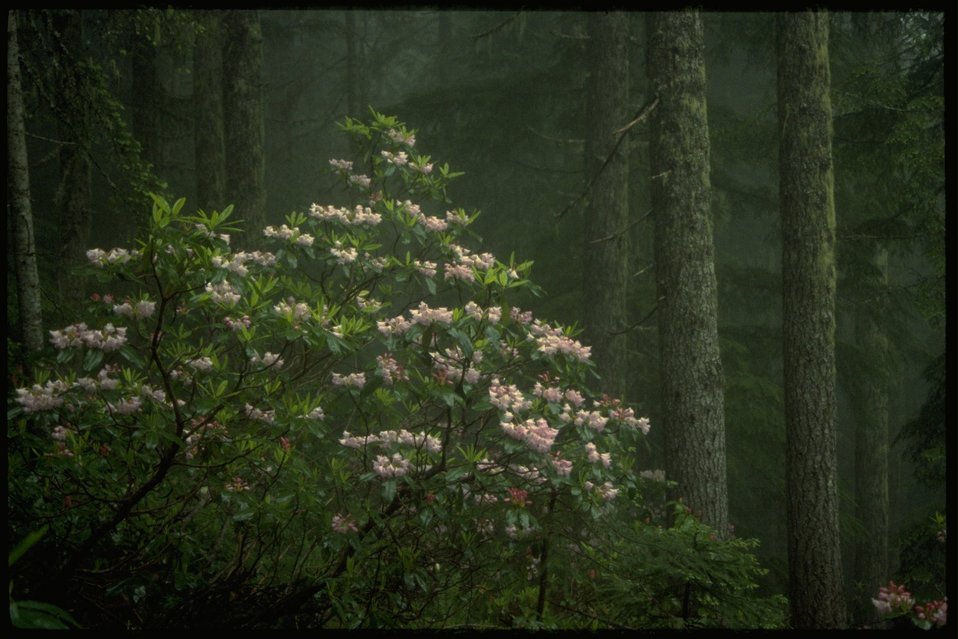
Trillium, a North American herb of the Liliaceae family.